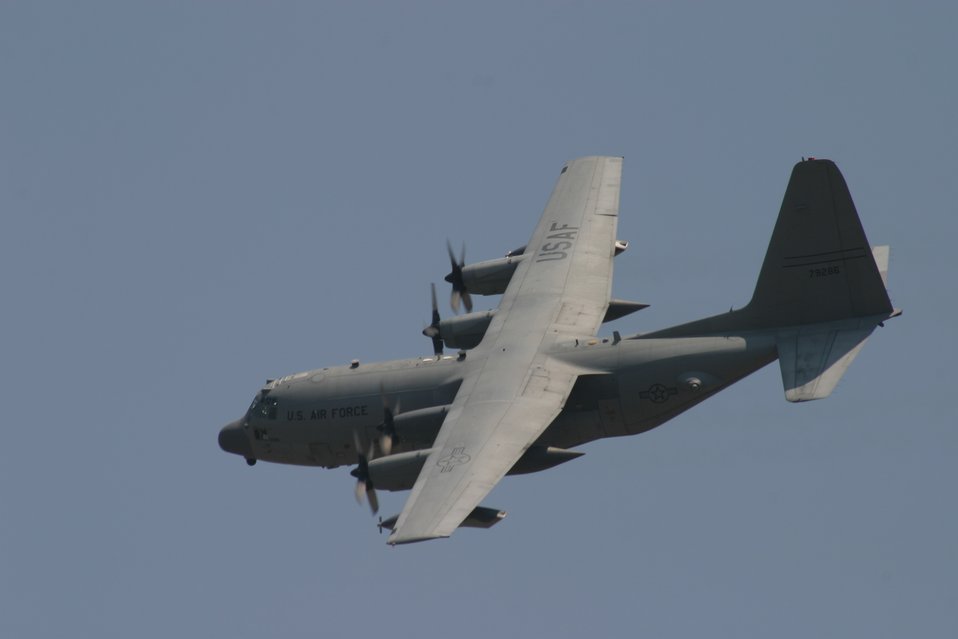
MC-130W

The Air Force Special Operations Command’s MC-130W takes off on its maiden flight over Hurlburt Field, Fla., in 2006. .